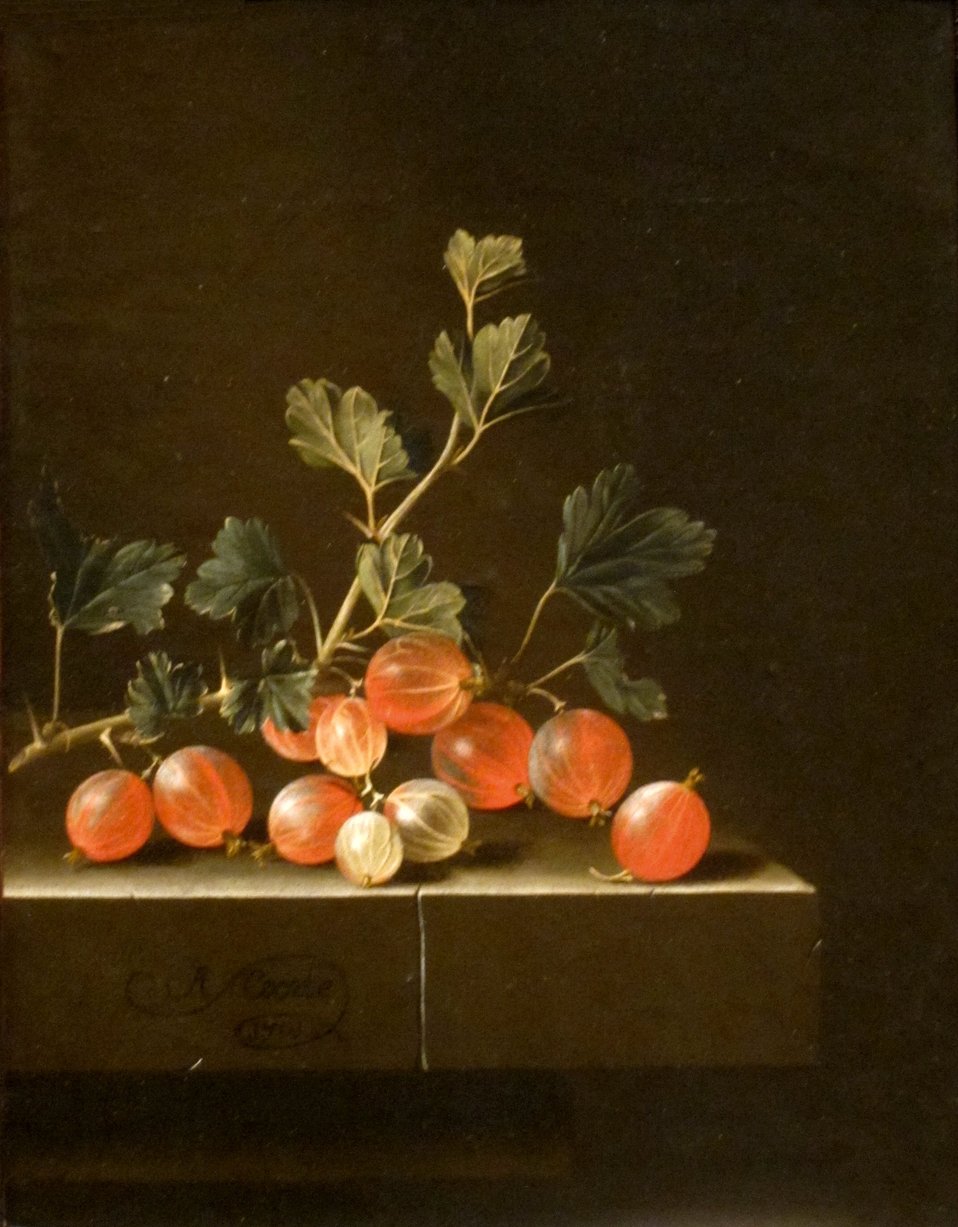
'Gooseberries on a Table' by Adriaen Coorte, 1701, Cleveland Museum of Art